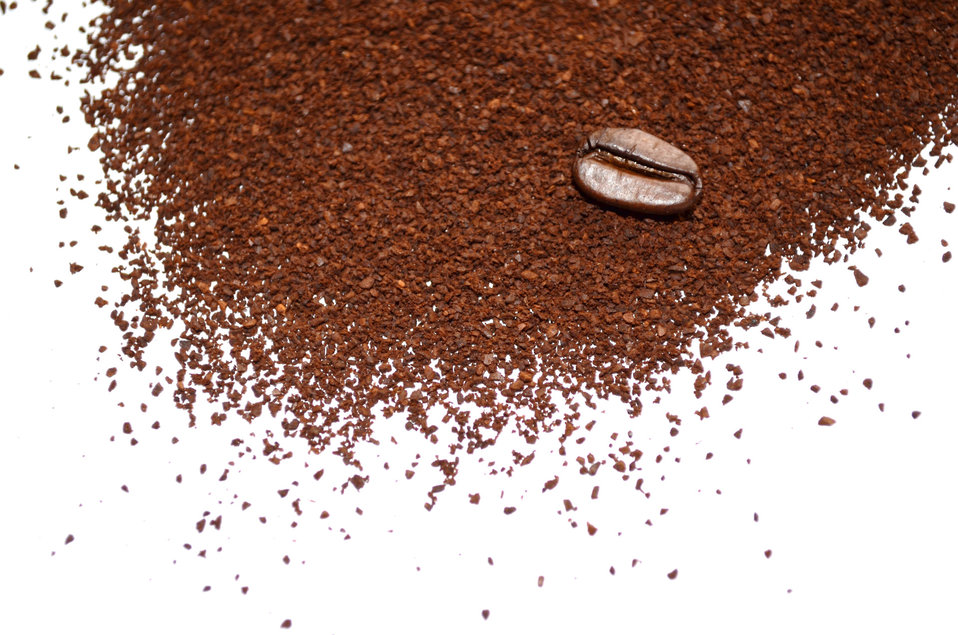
Ground coffee.